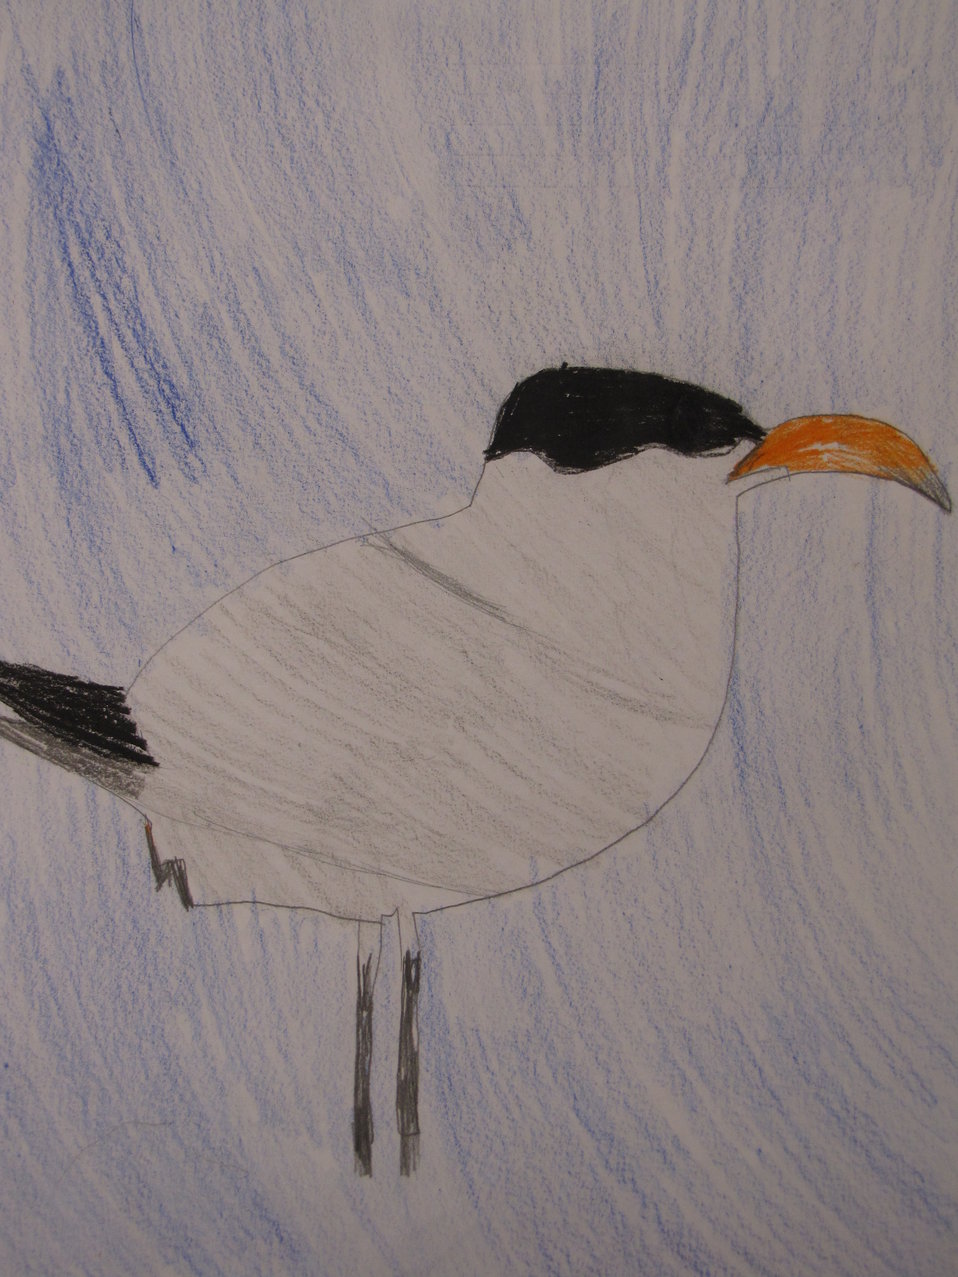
Caspian tern, by Alex Stevens - 5th grade. One of the class winners for the annual Bird Banner competition. Community school kids draw and color migratory birds and 90 of the winners from over 1000 entries are turned into poster-sized banners to hang down main street of Brigham City this summer.